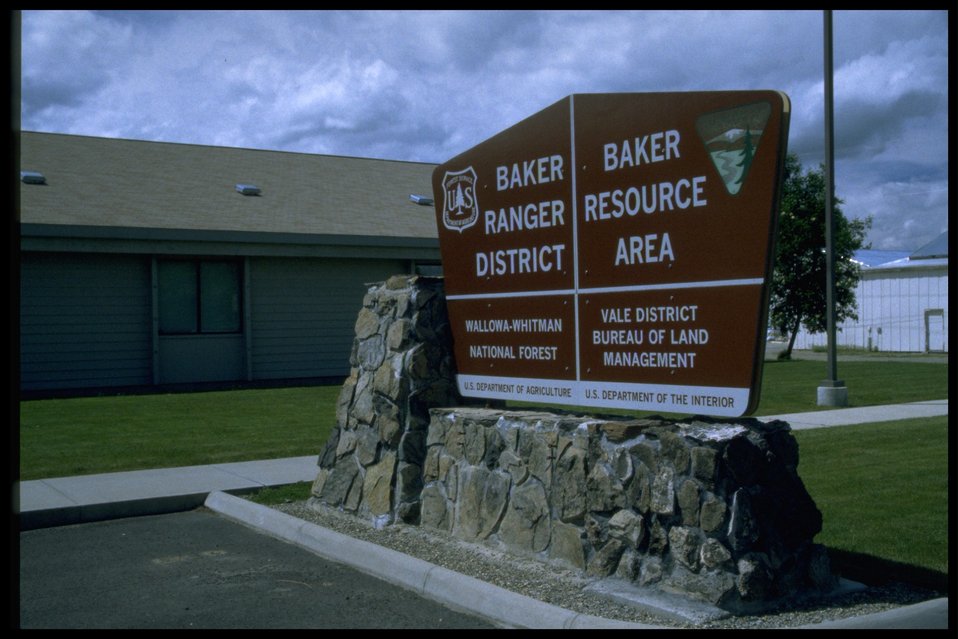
BLM Baker Resource Area Sign.